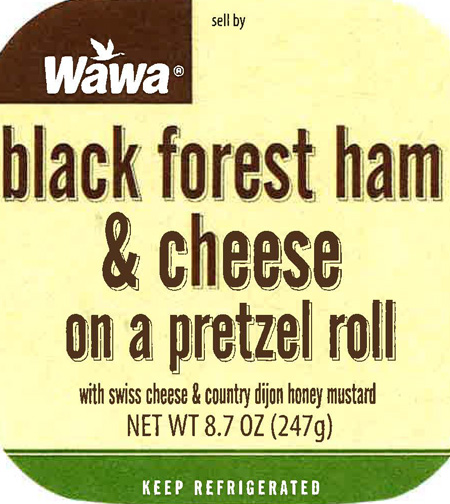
RECALLED - Black Forest Ham and Cheese on a Pretzel Roll

JUNE 21, 2013 – Product Recall – Taylor Farms New Jersey Issues Allergy Alert on Undeclared Tree Nuts in Black Forest Ham and Cheese on a Pretzel Roll with Swiss Cheese and Country Dijon Honey Mustard .